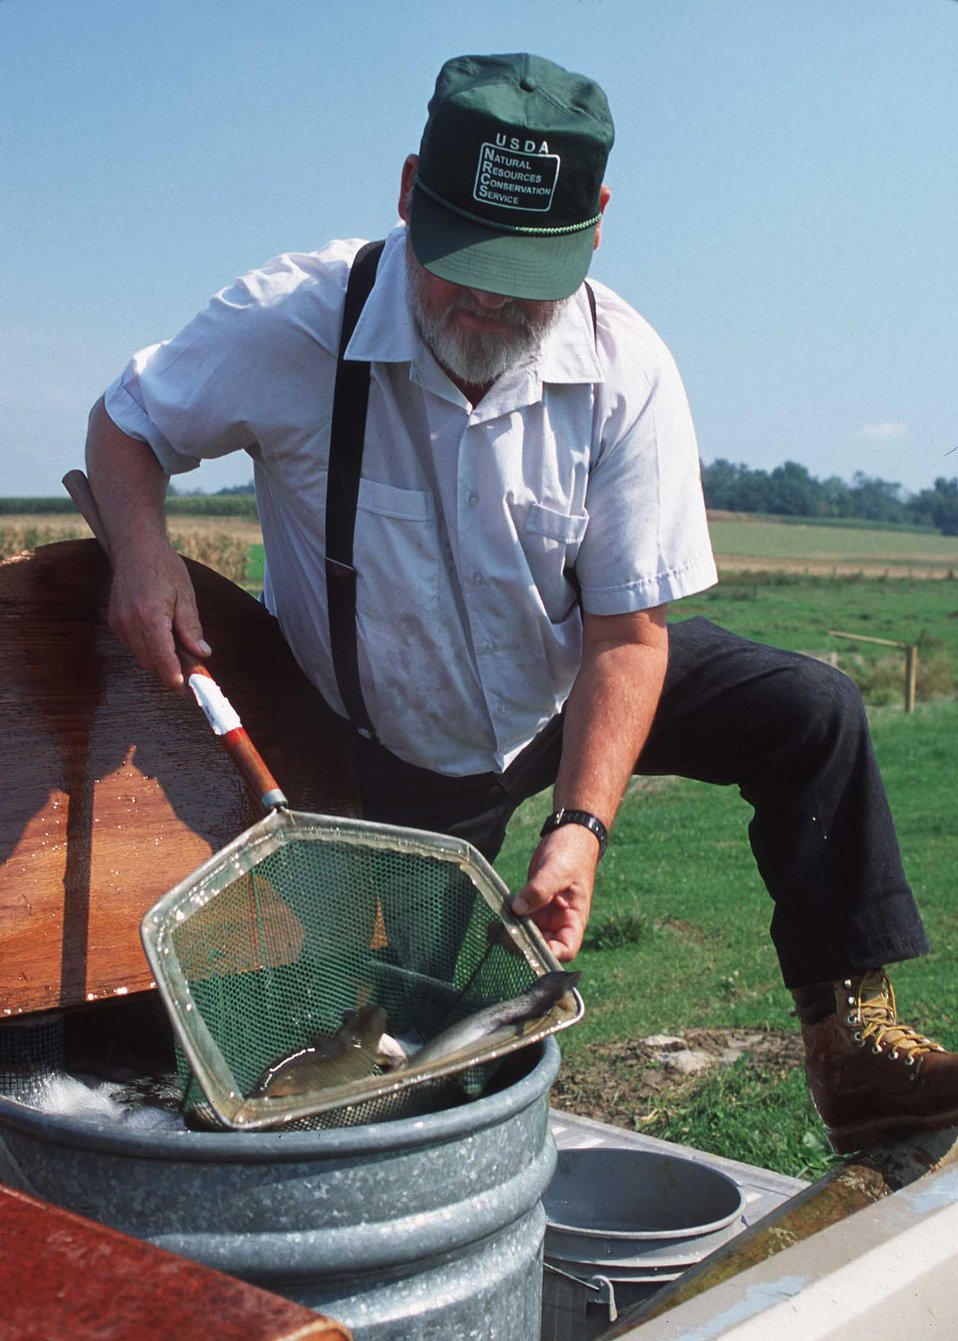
Fish Stocking in Improved Streams in PA.